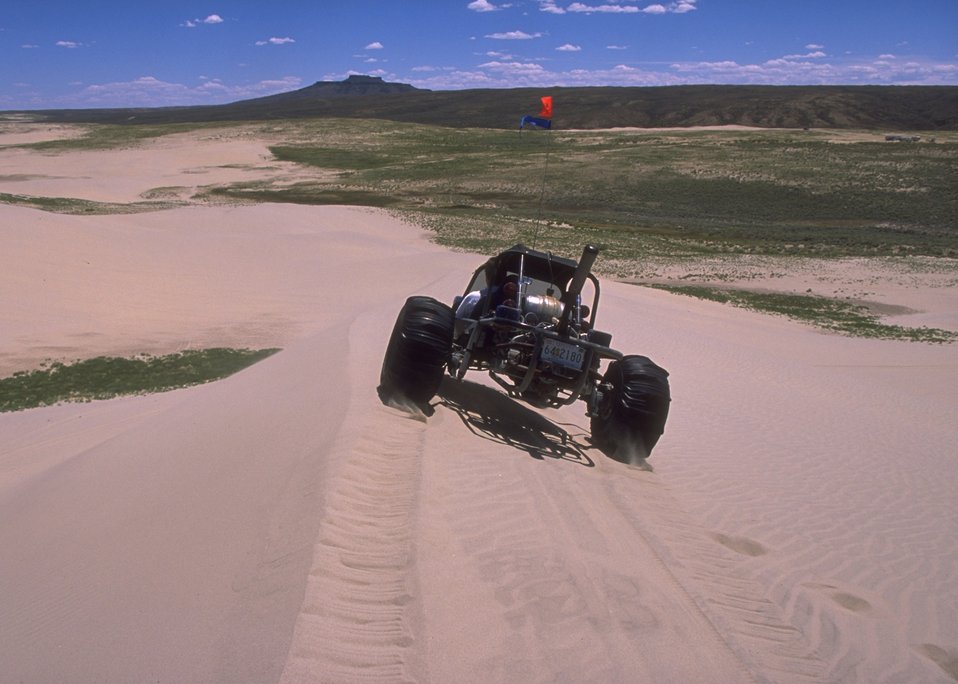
Sand Dunes OHV Area, Rock Springs Field Office.